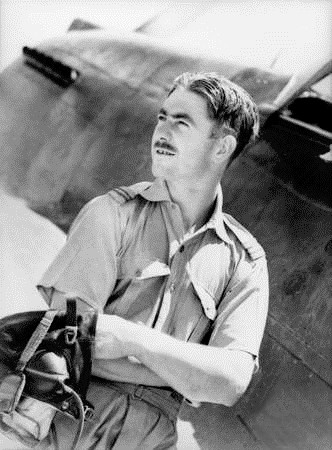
British Mandate of Palestine, 6 June 1941. Flying Officer Peter Turnbull of No. 3 (RAAF) Squadron, one of the original and best known fighter pilots in the Middle East has recently been testing the new Tomahawk planes with which the squadron has been equipped. He is from Glen Innes, N.S.W.